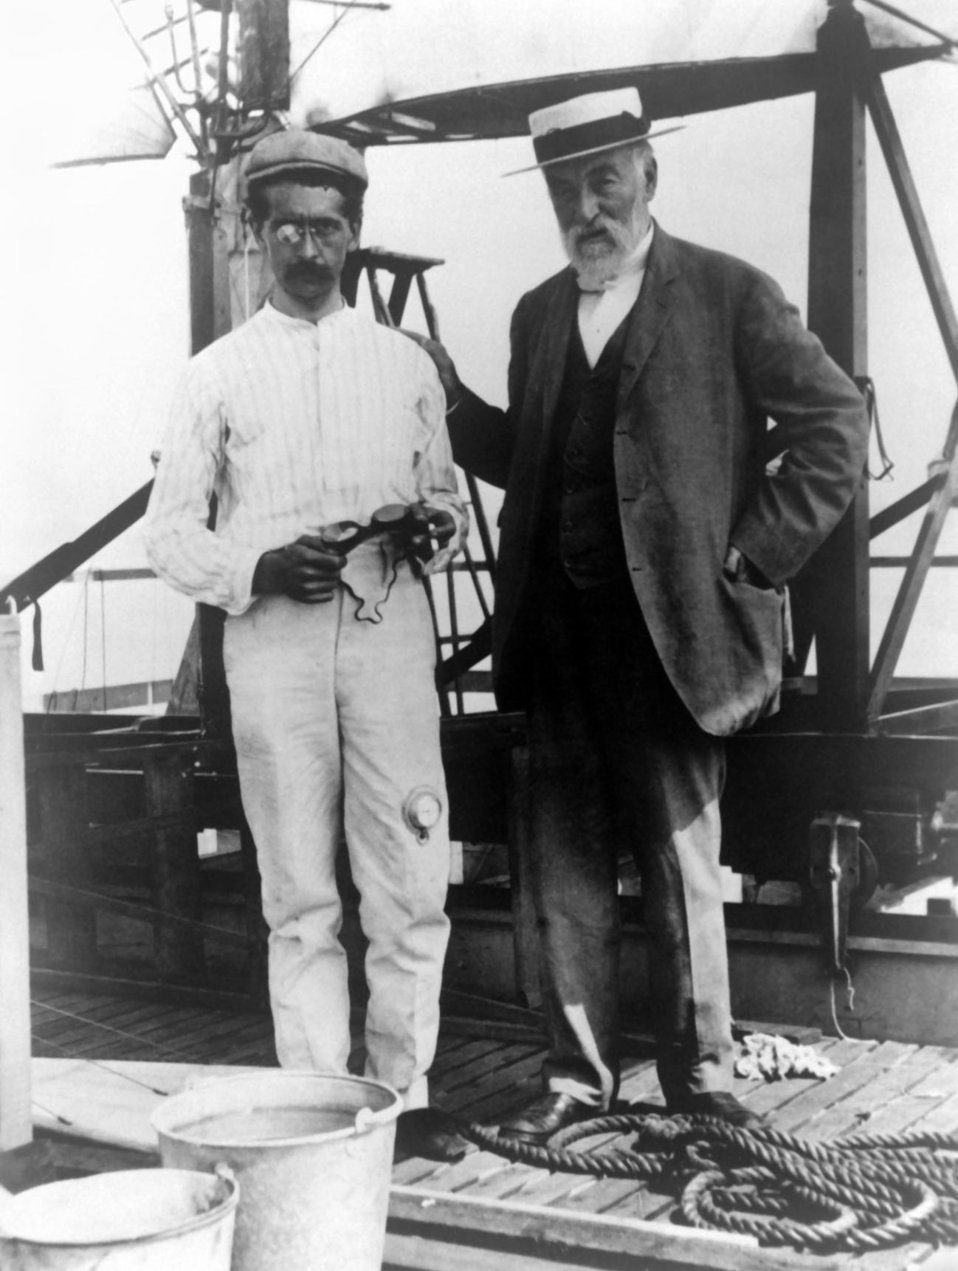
Samuel Pierpont Langley and Charles M. Manly (left), chief mechanic and pilot on board the houseboat that launched Langley's Aerodrome aircraft over the Potomac River near Washington, D.C. in 1903. Even though he was one of the pioneers of flight in America, Langley never saw his dreams fulfilled.